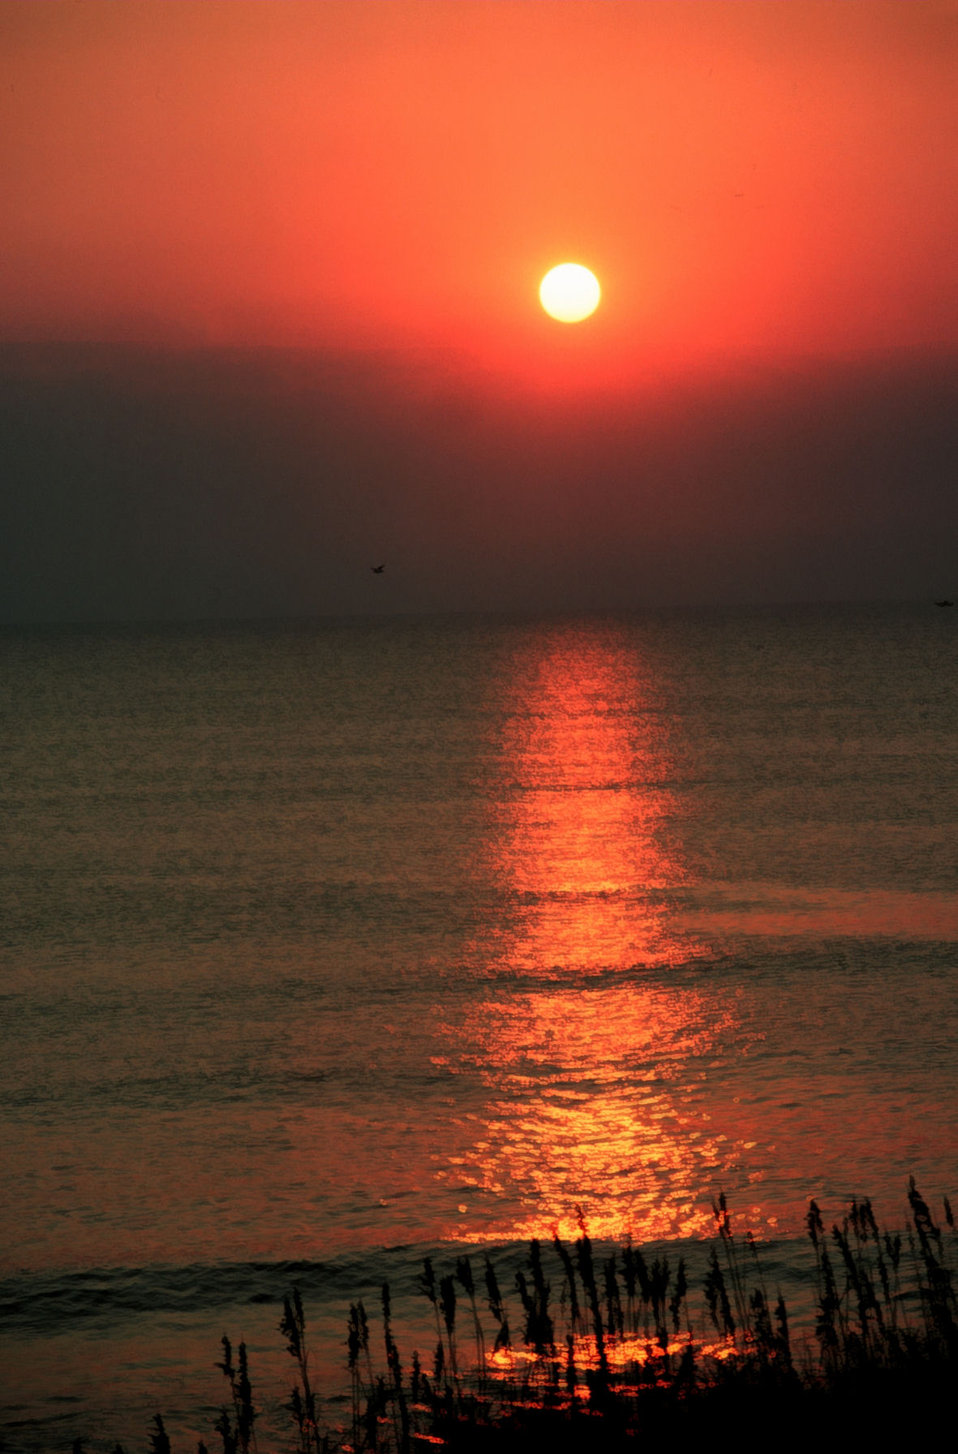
Reflections on a bronze sea